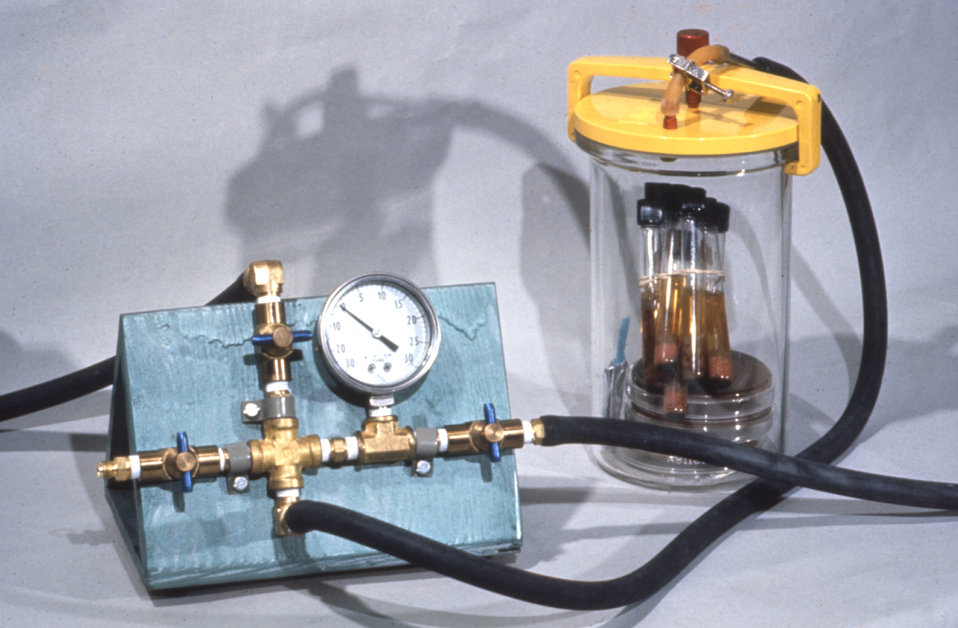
Here a GasPak jar with tubes and plates is connected to a board with its vacuum, gas outlets and gauge.